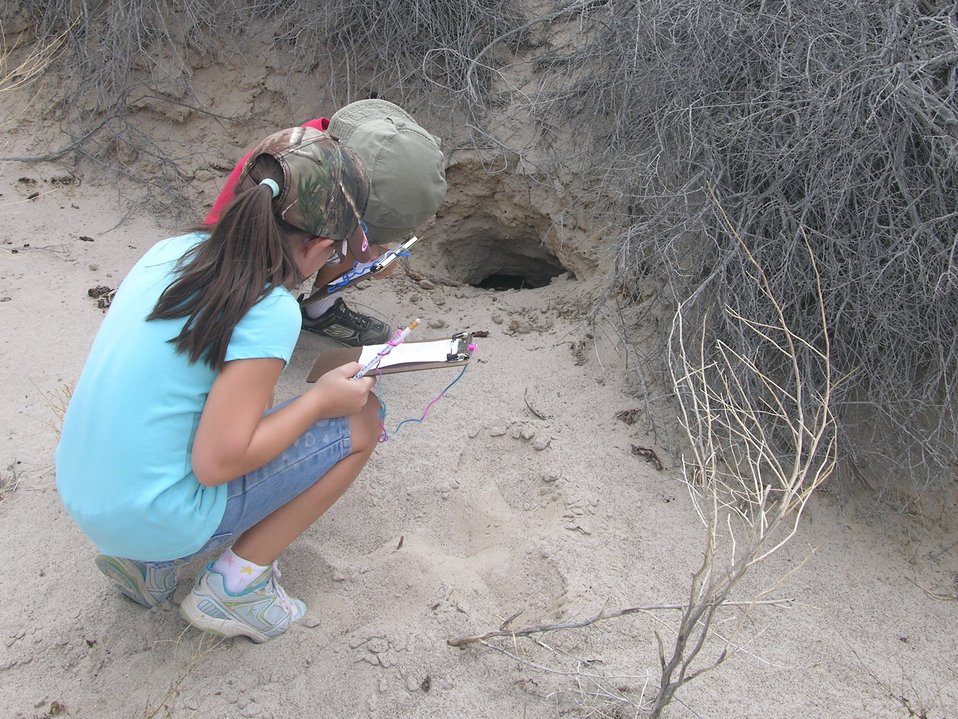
Kangaroo rat's home

Kids make observations of a rodent burrow in the sand dunes at Ash Meadows NWR in Nevada. Sharon Mckelvey/USFWS